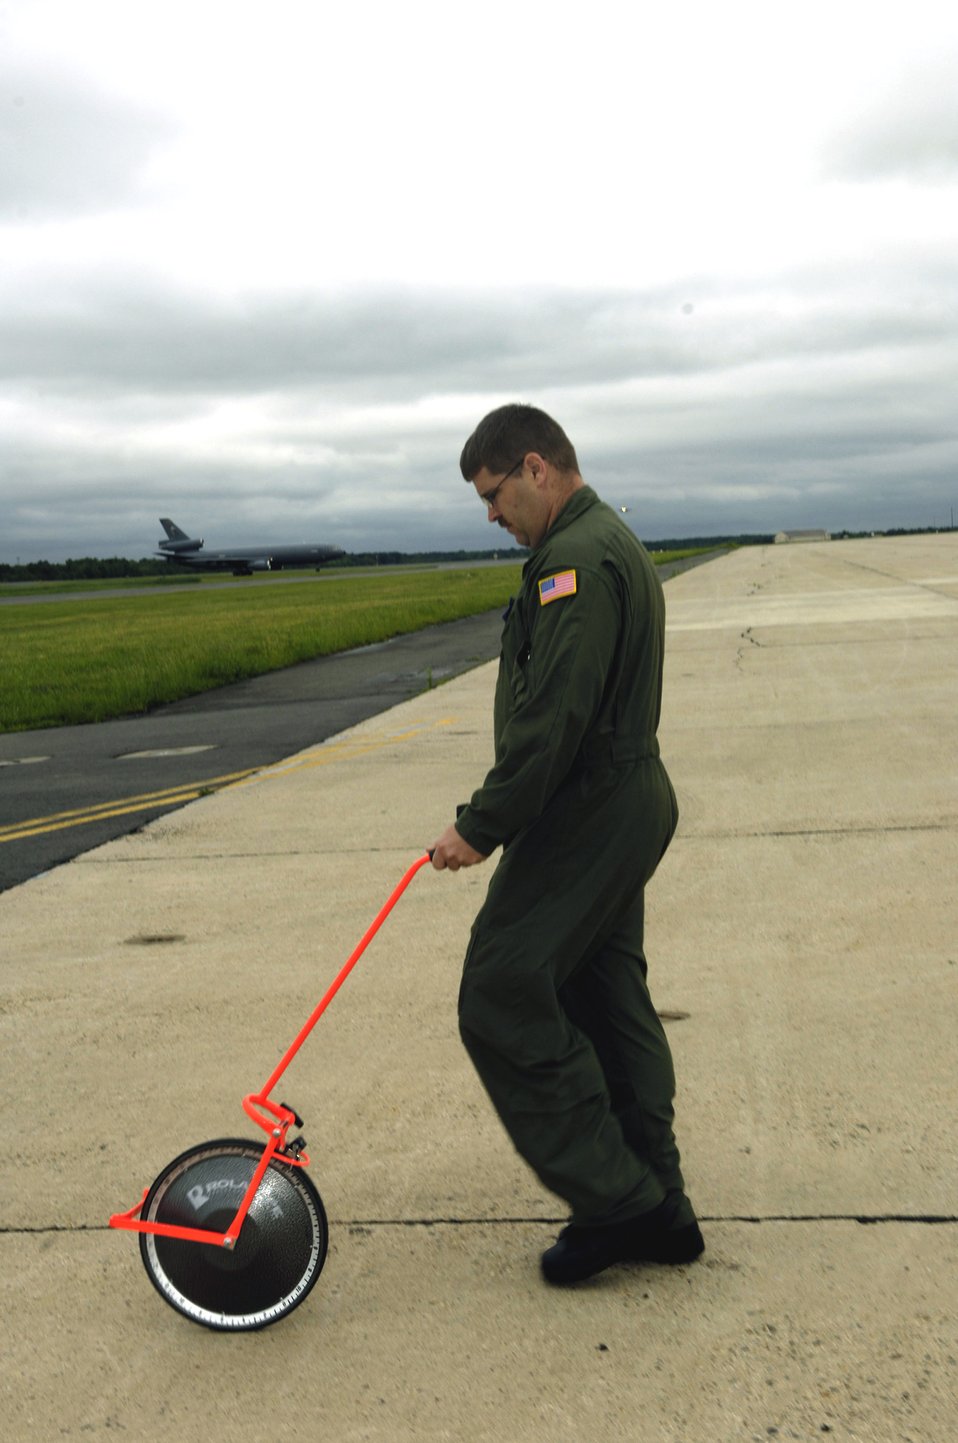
MOBILITY AIR FORCES MOBILE COMMAND AND CONTROL LEADERSHIP COURSE

Master Sgt. Michael Deehr uses a measuring wheel on the flightline at McGuire Air Force Base, N.J., during an airfield survey exercise June 4 for the Mobility Air Forces Mobile Command and Control Leadership Course. Sergeant Deehr is with the 819th Global Support Squadron at McGuire AFB.